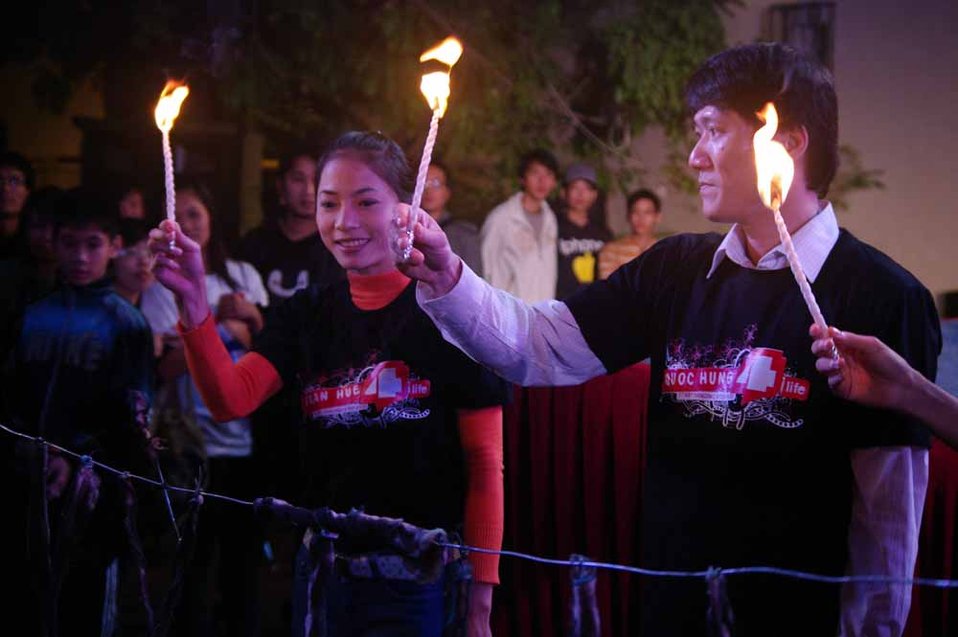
dance4life, Hanoi